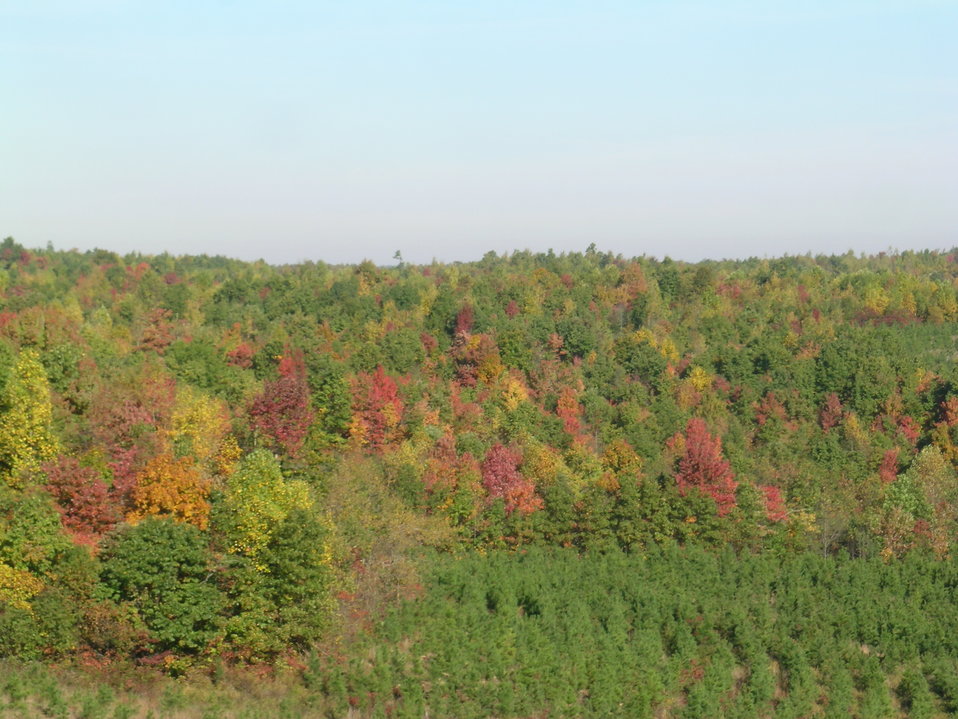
Day use areas on national forests and grasslands are included in the Veterans Day fee waiver, a perfect time to enjoy fall lakeside and scenic trails.